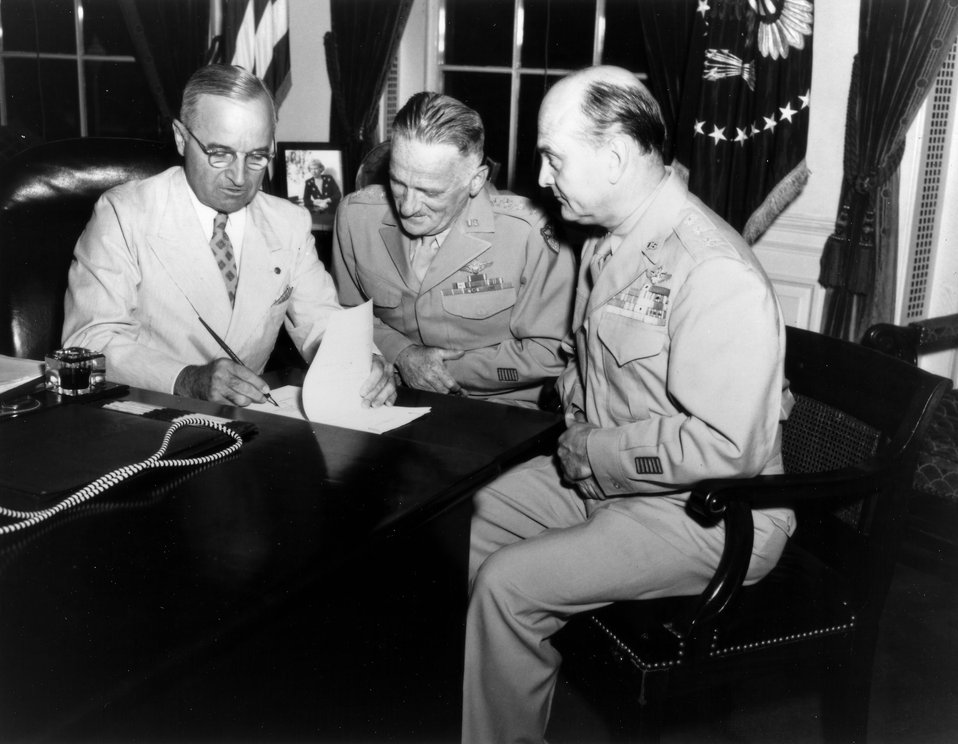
Truman signs Air Force Day proclamation

1946 -- President Truman signs the Presidential Proclamation designating August 1, 1946 as Air Force Day. With him are Gen. Carl A. Spaatz, Commanding General of the Army Air Forces, and Lt. Gen. Ira C. Eaker, Deputy Commander of the AAF. On Aug. 1, the Air force will celebrate the 39th Anniversary of its inception in 1907 as the Aeronautical Division in the Office of the Chief Signal Officer of the United States Army, when the Air Force comprised three men and no airplanes.